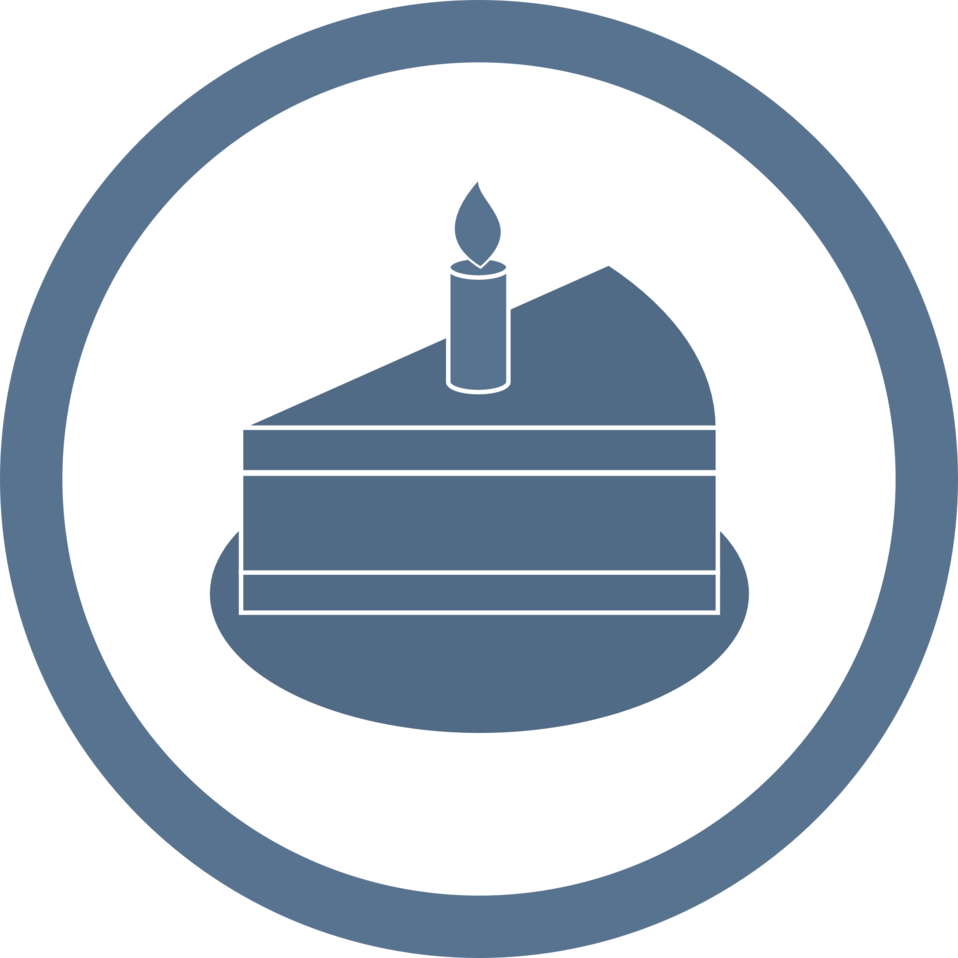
replica of the 'Cake is a lie' picture from the video game Portal